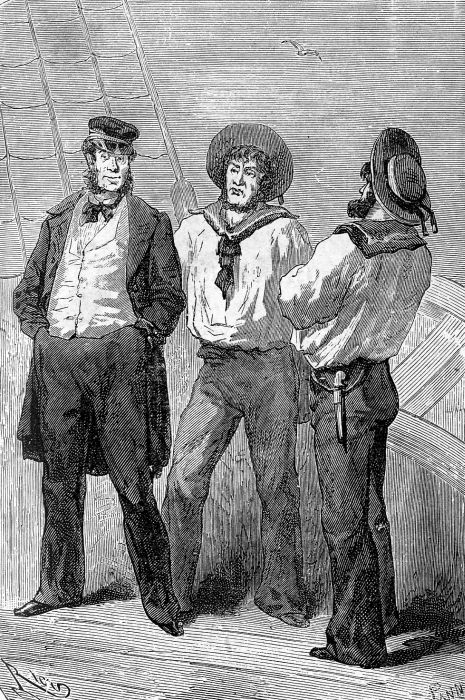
An ilustration from the novel 'In Search of the Castaways; or Captain Grant's Children' by Jules Verne drawn by Édouard Riou. Polski: Ilustracja powieści Juliusza Verne'a 'Dzieci kapitana Granta' autorstwa Édouarda Riou. Français : 'Les Enfants du capitaine Grant', Édouard Riou. Français : Tom Austin, Wilson et Mulrady.